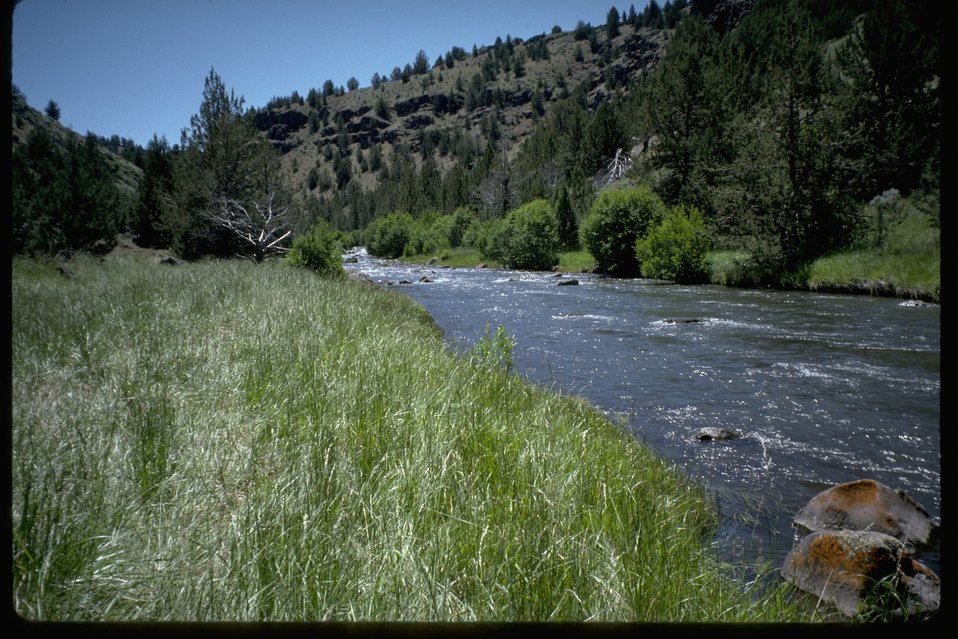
Donnner und Blitzen wild and scenic river riparian area. Good water quality and Red band trout habitat.